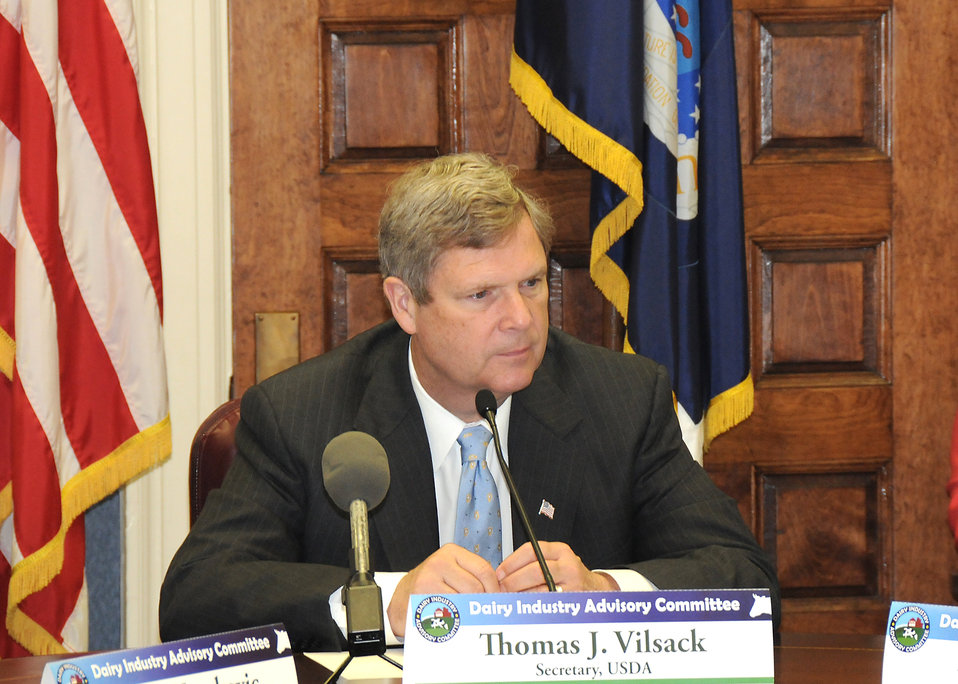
Agriculture Secretary Tom Vilsack spoke to the 17 member Dairy Industry Advisory Committee (DIAC) and dairy industry representatives in the Williamsburg room at the Department of Agriculture in Washington, D. C., on Tuesday, April 13, 2010. The committee, which was established by USDA in August 2009, was designed to advise the secretary on policy issues impacting the dairy industry. The three-day public meeting will allow members to review farm milk price volatility and dairy farmer profitability, and make recommendations on how USDA can best address the long- and short-term needs of the dairy industry. USDA photo 10di1306-41